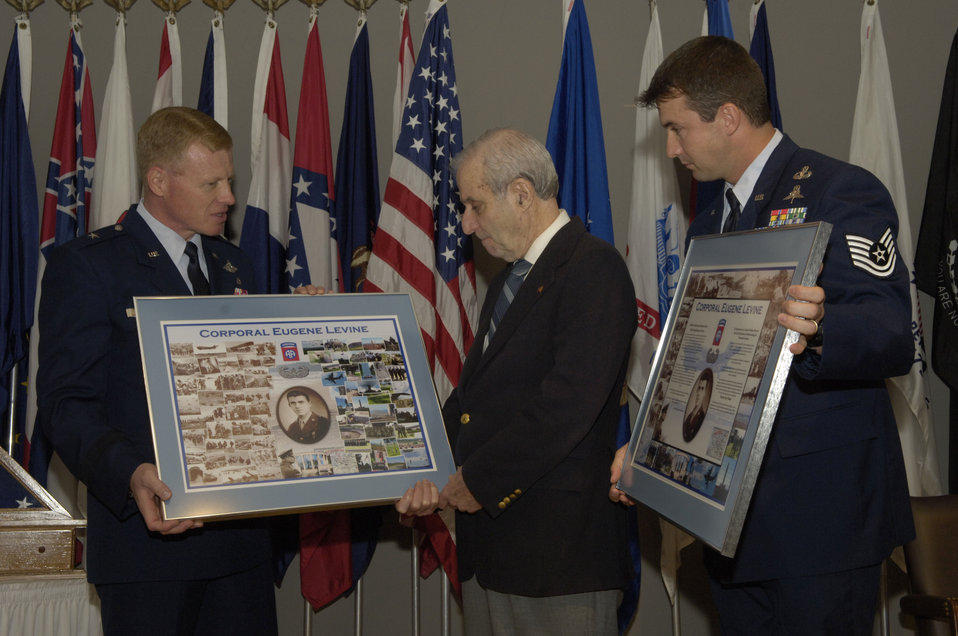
Army Air Corps weatherman honored for D-Day contributions

Brig. Gen. Lawrence Stutzriem and Tech. Sgt. John Lee present Dr. Eugene Levine with two collages that highlight his accomplishments as a weather forecaster during D-Day at an Oct. 6 ceremony at Arlington, Va. General Stutzriem is the director of weather and deputy chief of staff for air, space and information operations.